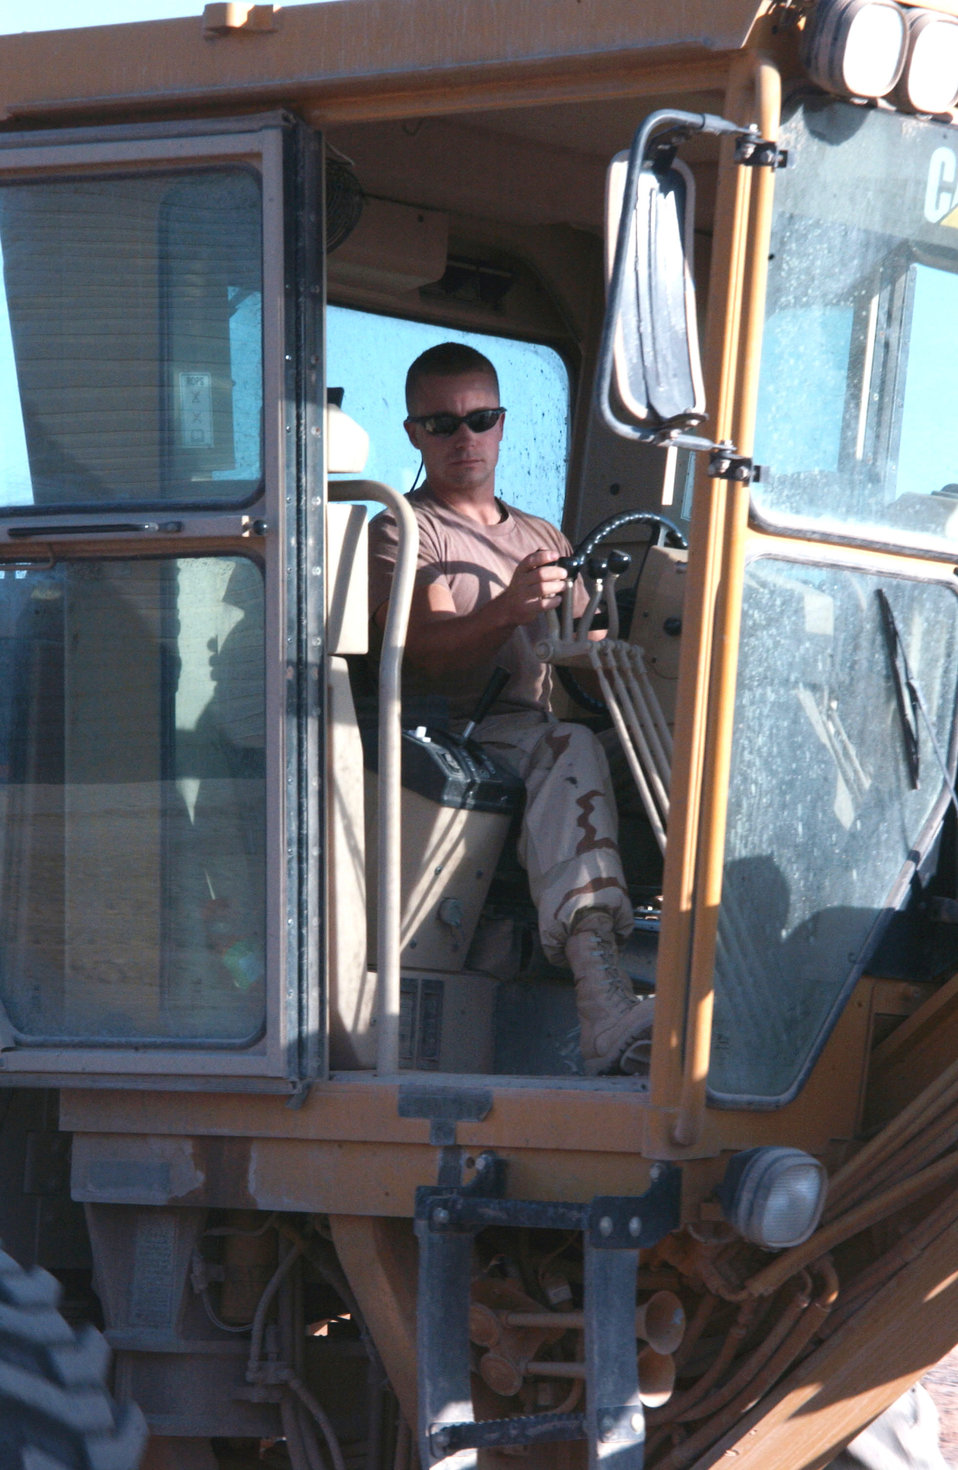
'Dirtboyz' keep Balad airfield operational

Staff Sgt. Shawn Ziesler operates a grader to level ground Nov. 1 at Balad Air Base, Iraq. Sergeant Ziesler is a 332nd Expeditionary Civil Engineer Squadron pavements and equipment craftsman deployed from Eglin Air Force Base, Fla.